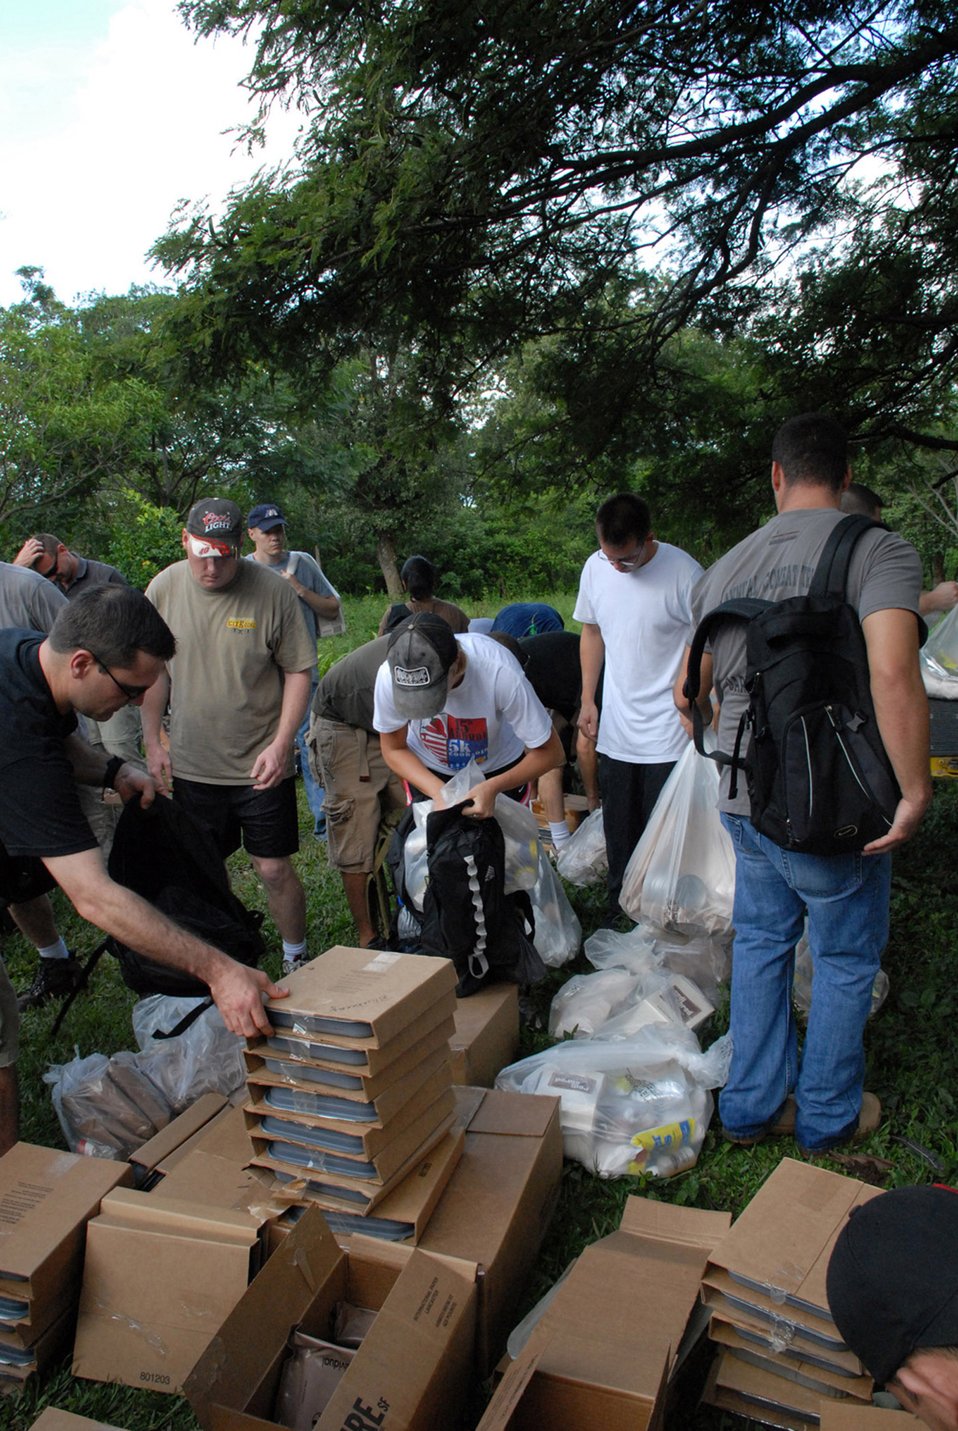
Servicemembers deliver food to Honduran mountain village

American servicemembers load their packs and backpacks with food Oct. 20 to deliver to people in the village of Bella Vista, Honduras. The hike was organized by the Joint Task Force Bravo chaplain to support local Hondurans. Approximately 50 servicemembers from Soto Cano Air Base, Honduras, participated in the hike.